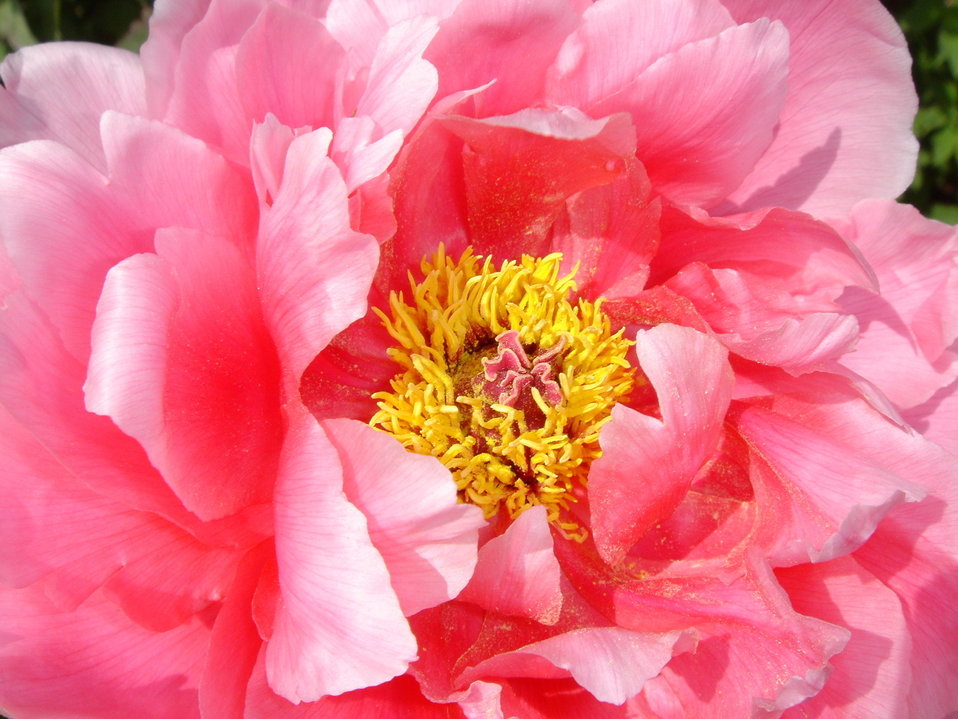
Paeonia suffruticosa6